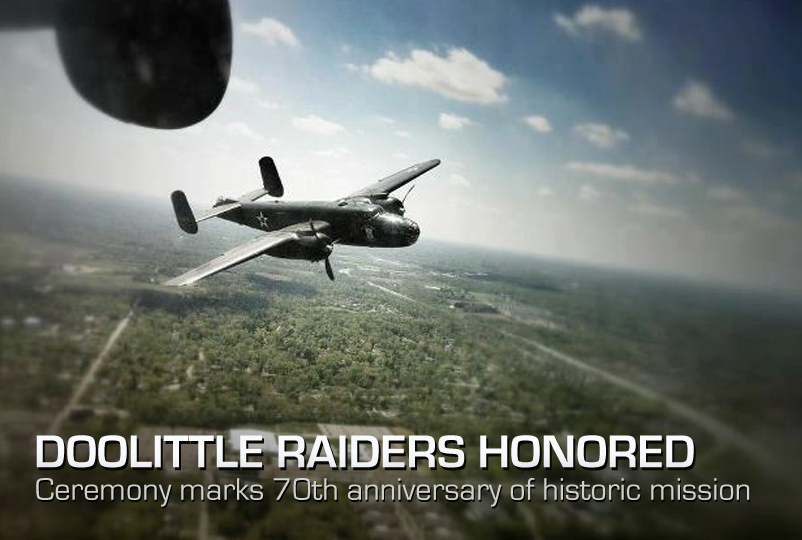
Doolittle Raiders Honored